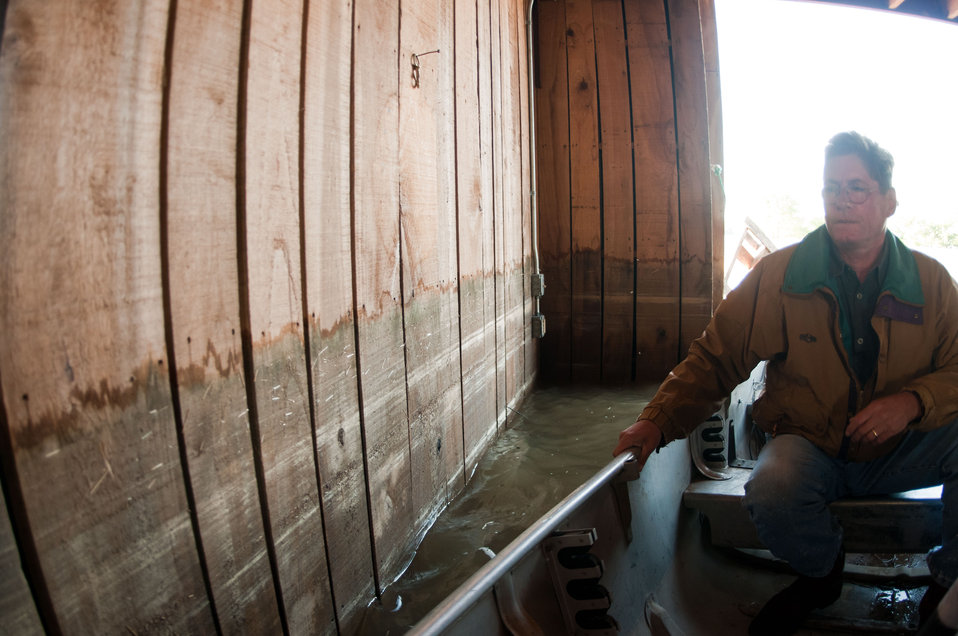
Joe Higdon rides a boat into the barn on his ranch on President's Island. Floodwaters from the Mississippi River still cover the island with 6-12 feet of water on President’s Island near Memphis, TN on Sunday, May 15. 2011. Higdon said ' I build the barn on a rise thinking it would never get flooded.' The watermark line (left) clearly shows otherwise.